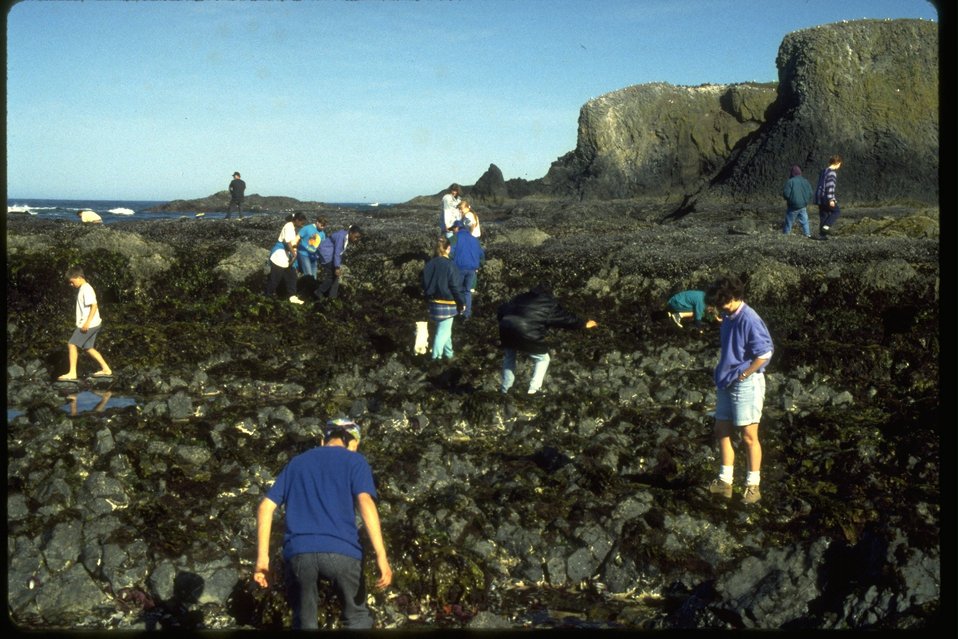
Cobble Beach Tide pools at Yaquina Head.